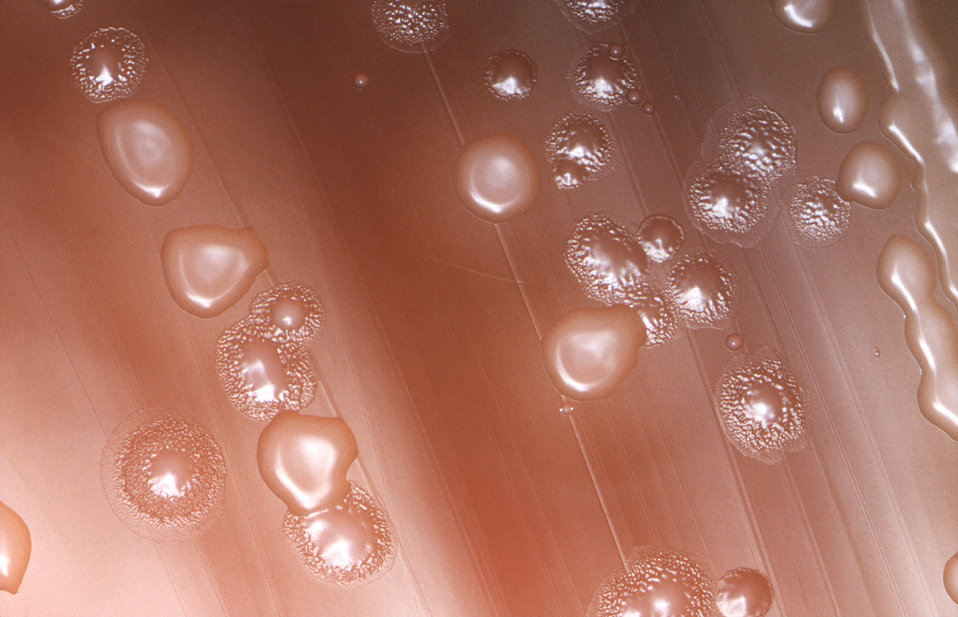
This image depicts the colonial characteristics displayed by Streptococcus pneumoniae bacterial colonies that were grown on primary isolation medium, consisting of trypticase soy agar containing 5% sheep's blood, as well as 5mg of gentamicin/ml. See PHIL 10864 for another view of this culture under a magnification of approximately 10X.